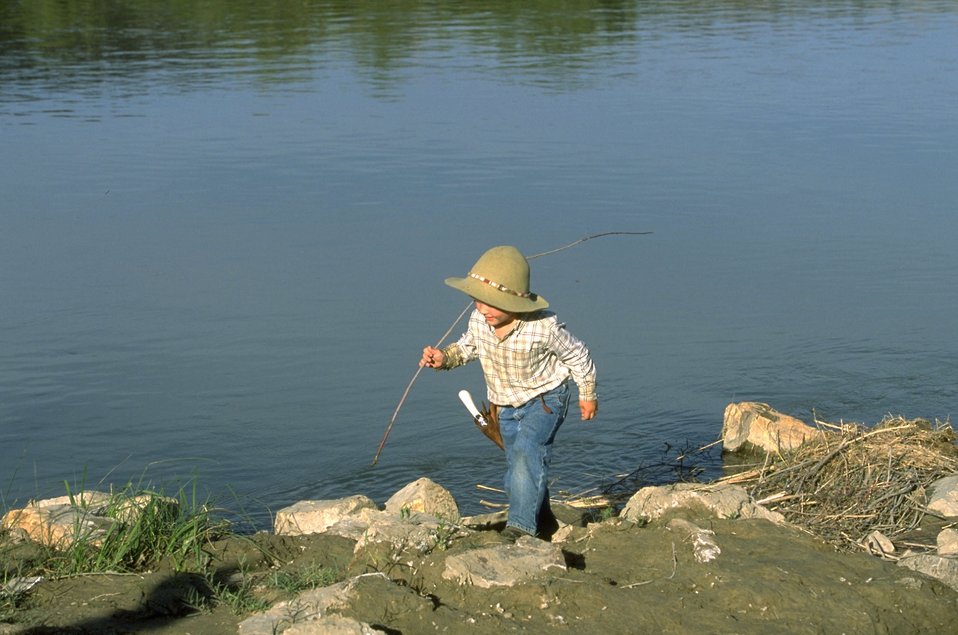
Children at Kipp Recreation Area